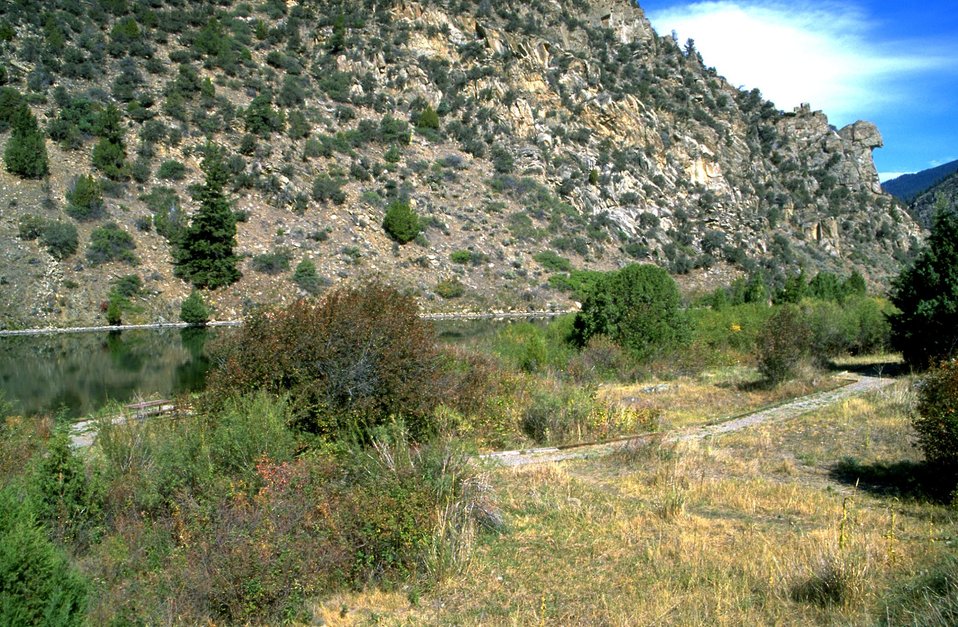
Bear Trap Trail